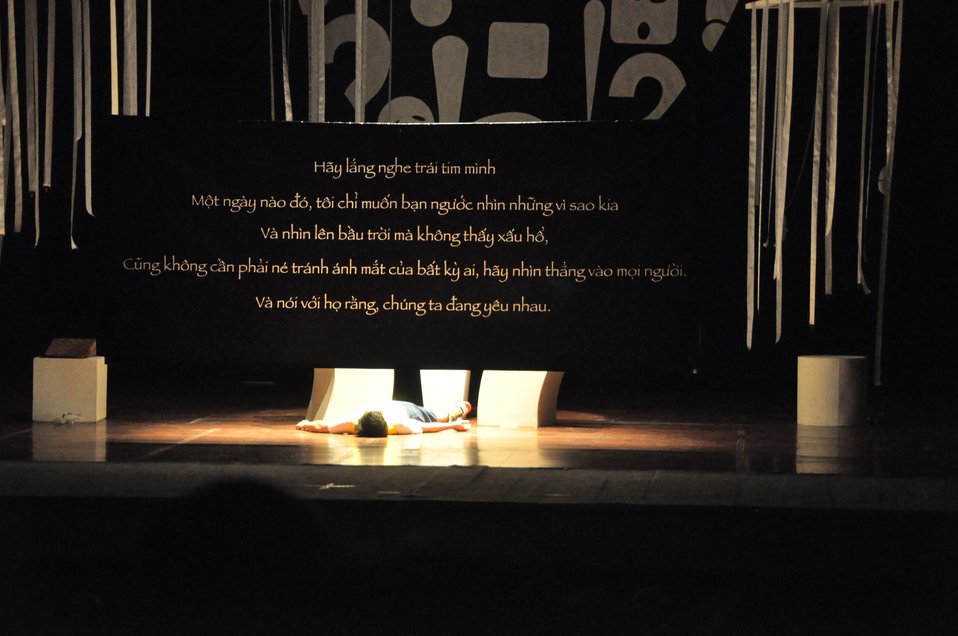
PEPFAR Musical Questions and Exclamations

Hanoi, May 17, 2013